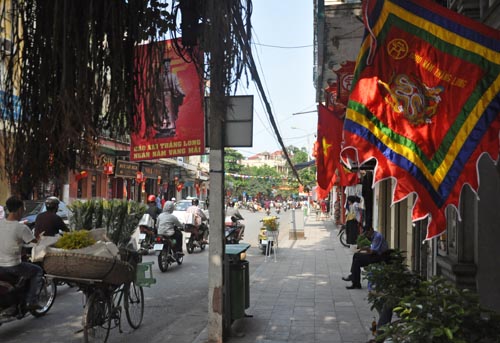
Hanoi's streets lined with colors for 1000th anniversary.